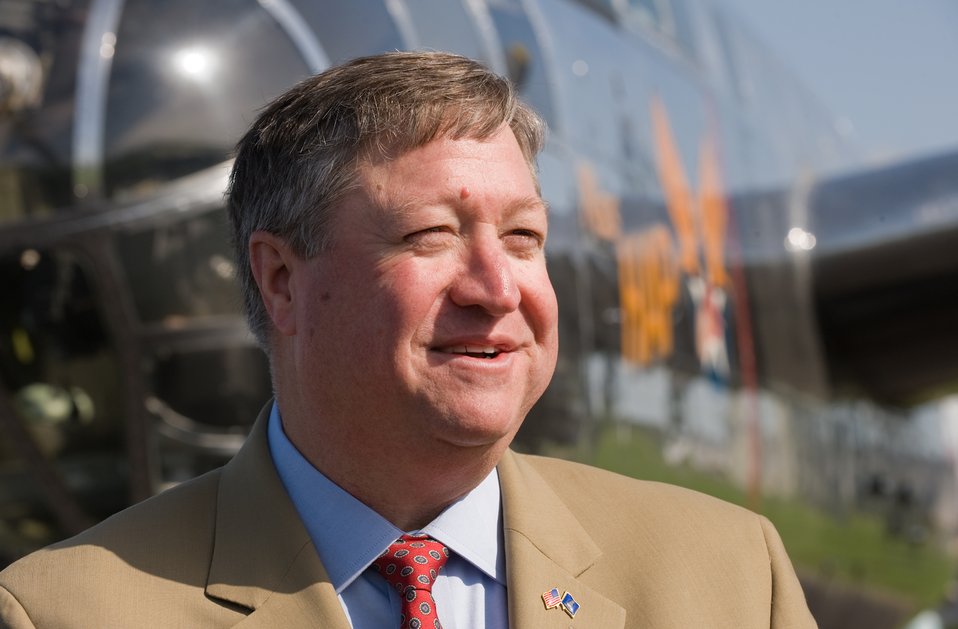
Mass B-25 Arrival

Secretary of the U.S. Air Force, Michael Donley speaks about the Doolittle Raiders during their 68th reunion held at the National Museum of the United States Air Force, Wright-Patterson Air Force Base, Ohio, April 17th, 2010. Secretary Donley is standing in front of B-25A